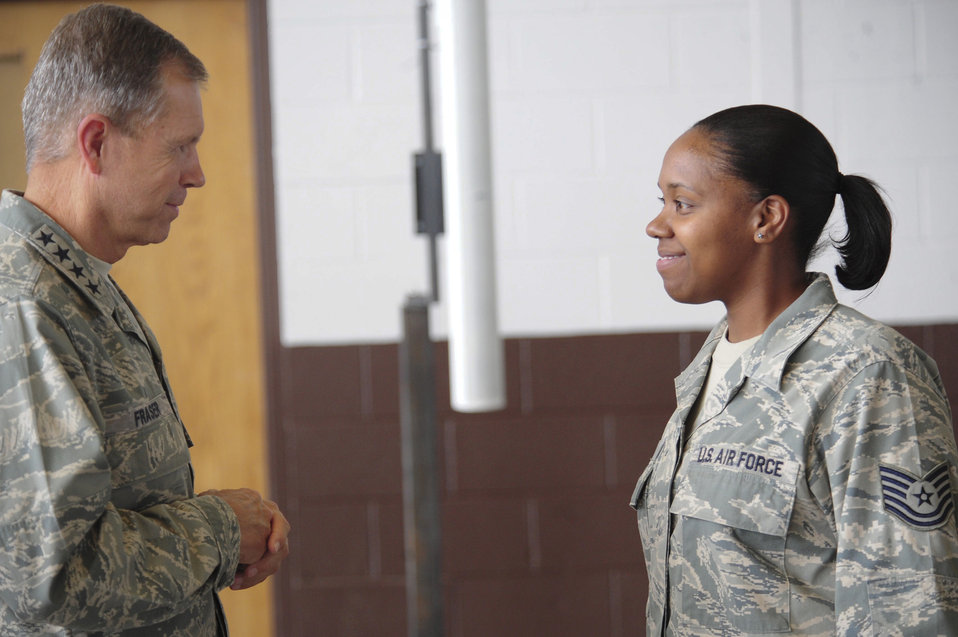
ACC commander visits Ellsworth

Gen. William M. Fraser III speaks to Tech. Sgt. Angela Baker after a commander's call Sept. 1, 2010, at Ellsworth Air Force Base, S.D. General Fraser answered questions from Airmen during and after the commander's call. General Fraser is the commander of Air Combat Command. Sergeant Baker is the 28th Medical Group administration services NCO in charge.